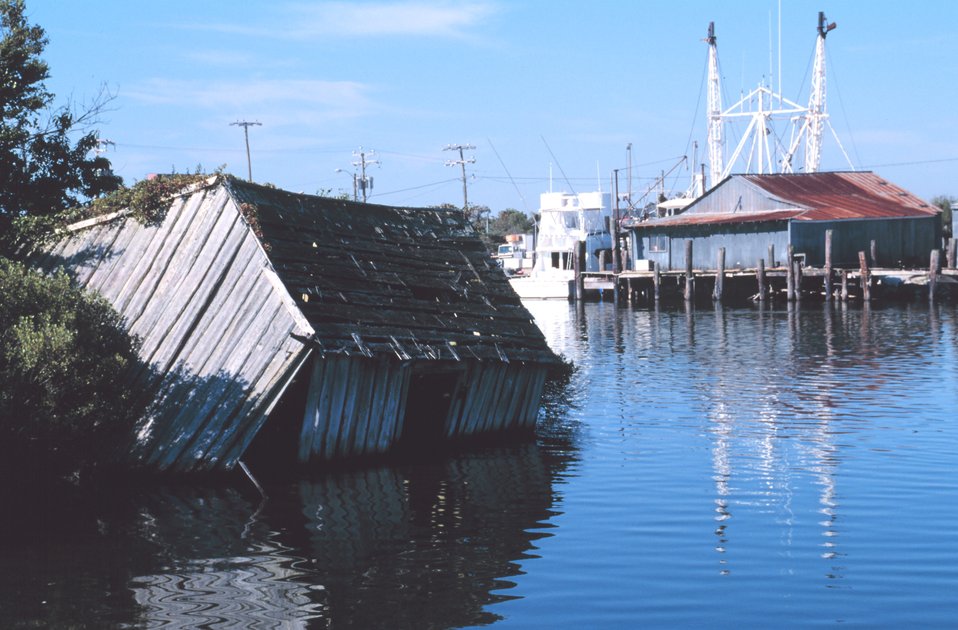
A dilapidated fishing shack